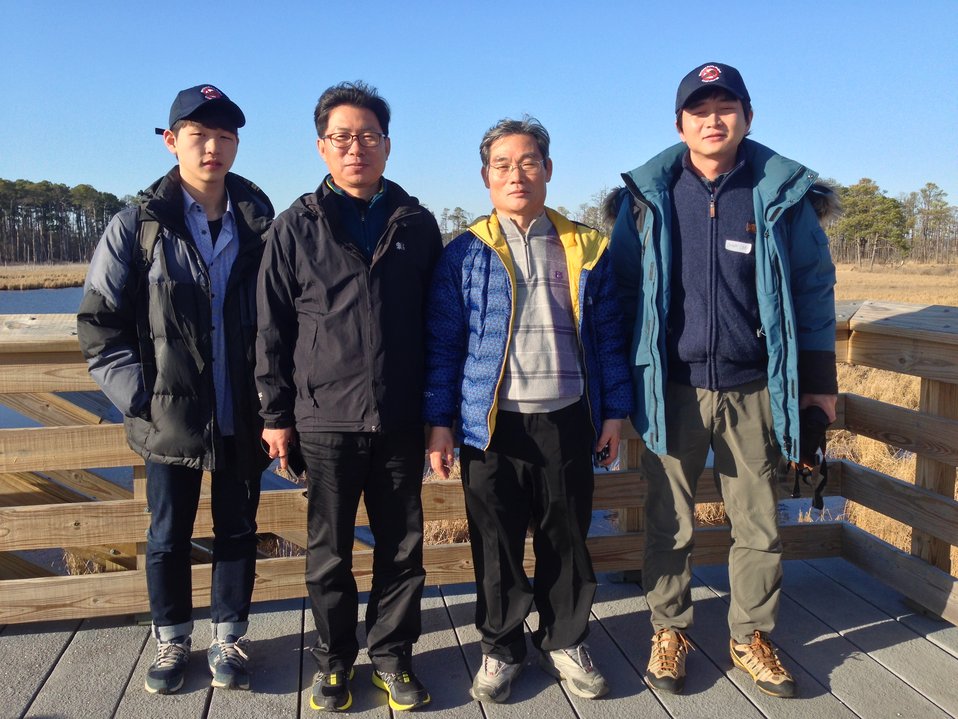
(L to R) Student/Interpreter Joe Lim, Republic of Korea's National Institute of Ecology and Ministry of Environment scientists Sung-Kyu Lee, Dr. Jong-Min Kim, and Do-Hun Lee stand on a lookout point at Chesapeake Bay, MD.